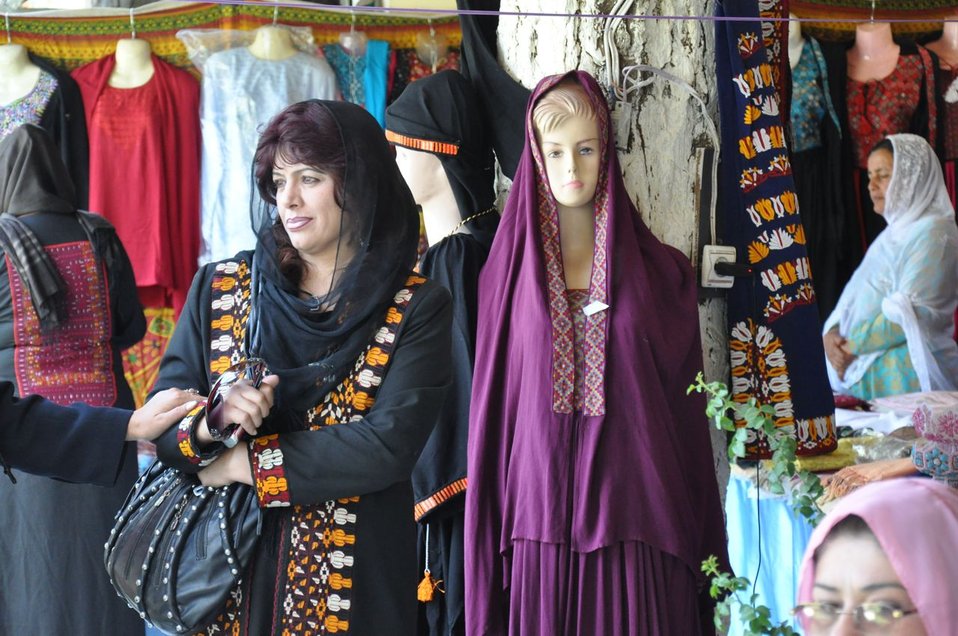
Mother's Day in Afghanistan